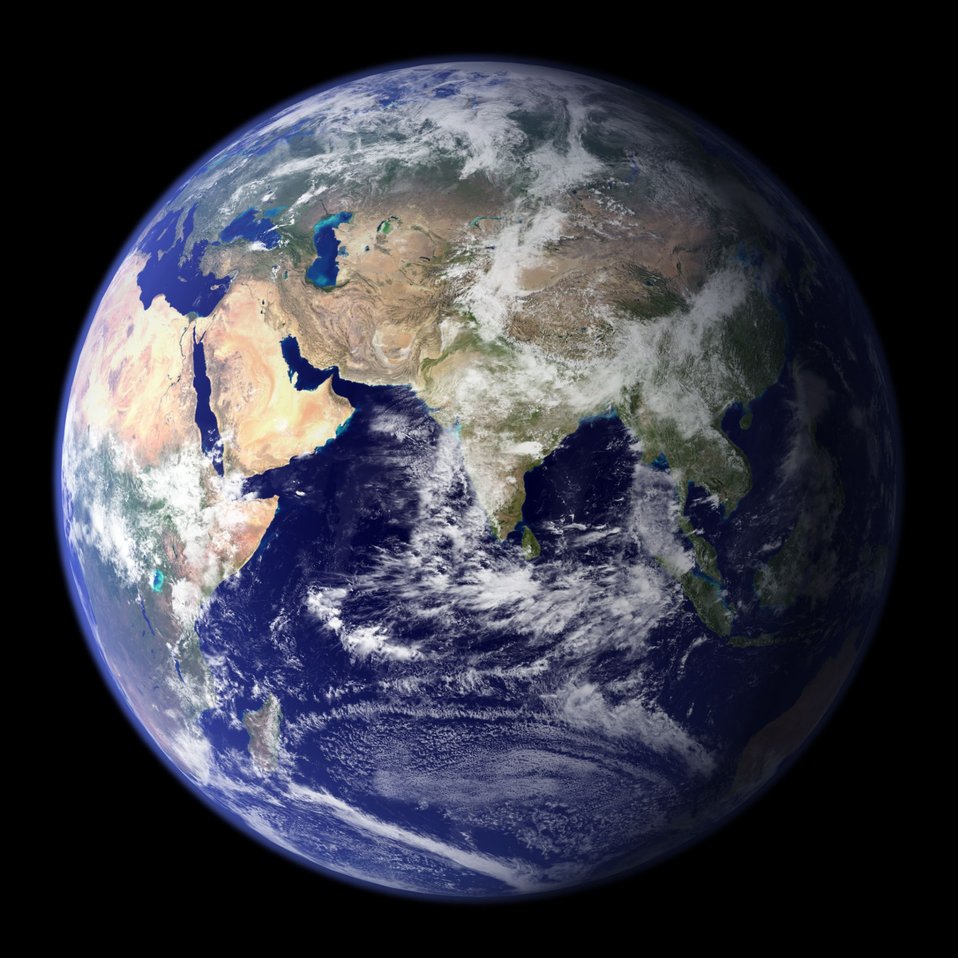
Planet earth

This is a public domain image created by nasa..